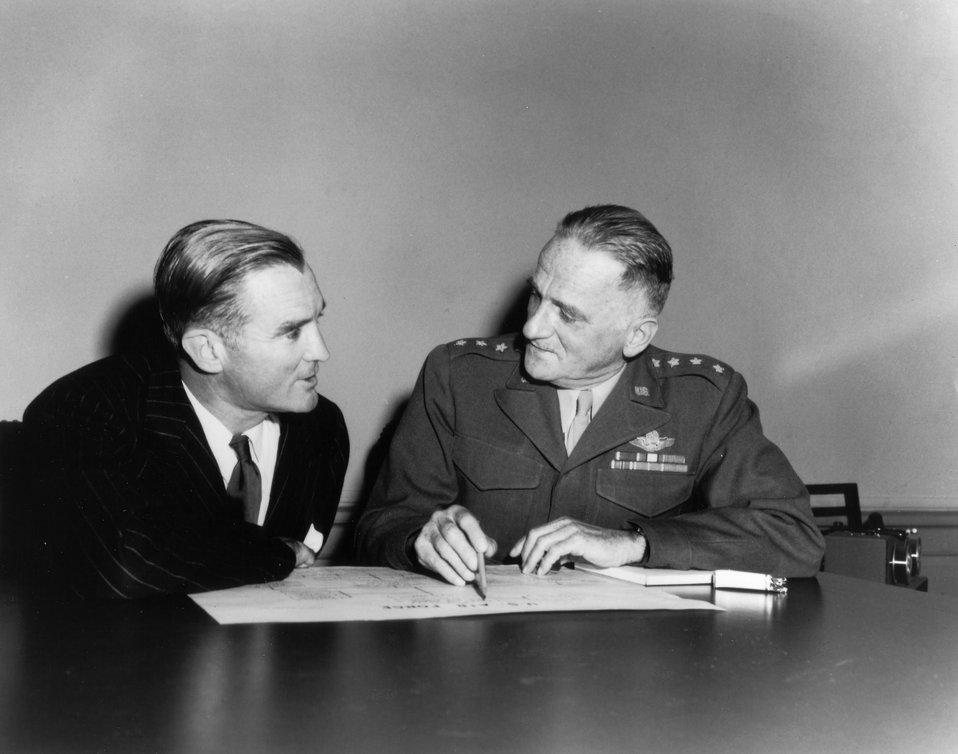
Secretary Symington and Gen. Spaatz

1940's -- W. Stuart Symington, first Secretary of the Air Force and Gen. Carl Spaatz, first Air Force Chief of Staff at a press conference announcing the new organizational set-up for the Department of the Air Force, 1947.